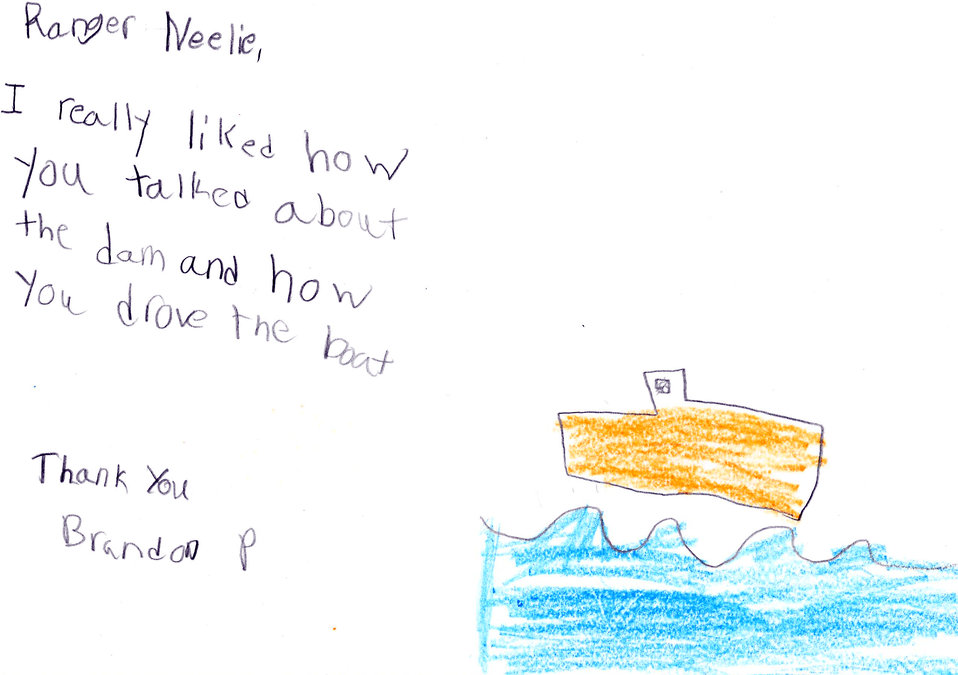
Over the waves

If day-to-day burdens have caused you to forget the simple joys of nature, consider this delightful cure: thank-you notes written by elementary school students to park rangers in the U.S Army Corps of Engineers Sacramento District.

Ranger Neelie’s boat handling left a definite impression.